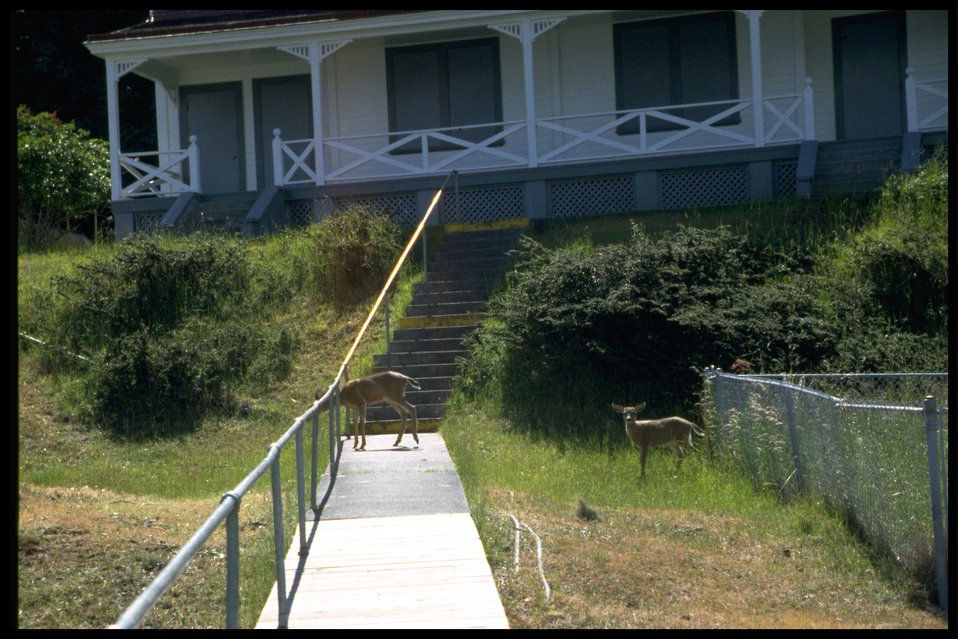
Deer walk between the Turn Point lighthouse and the living quarters.